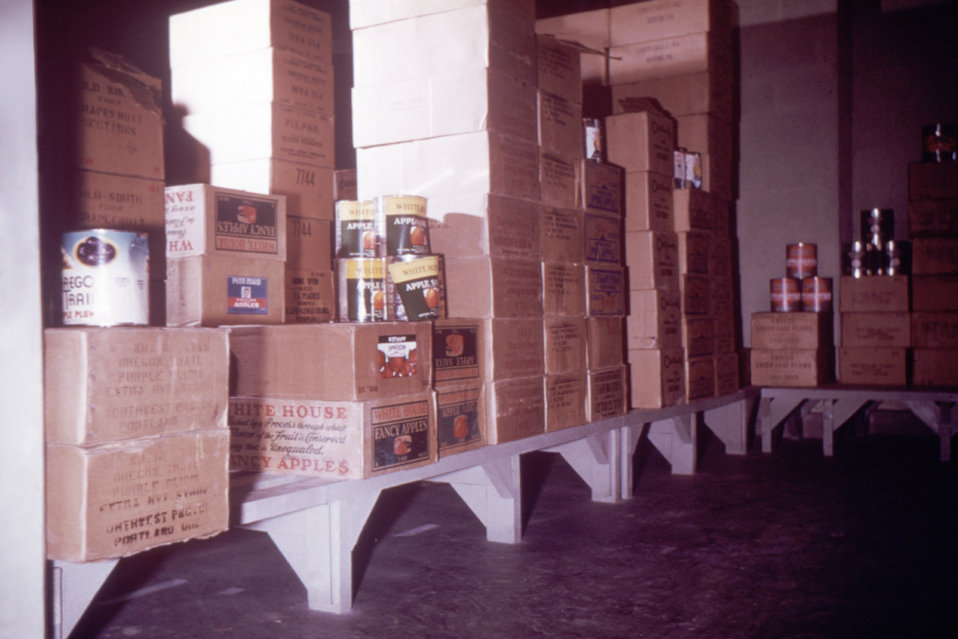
Note the properly organized foods in this food repository room with its elevated flooring, and sealed packaging.